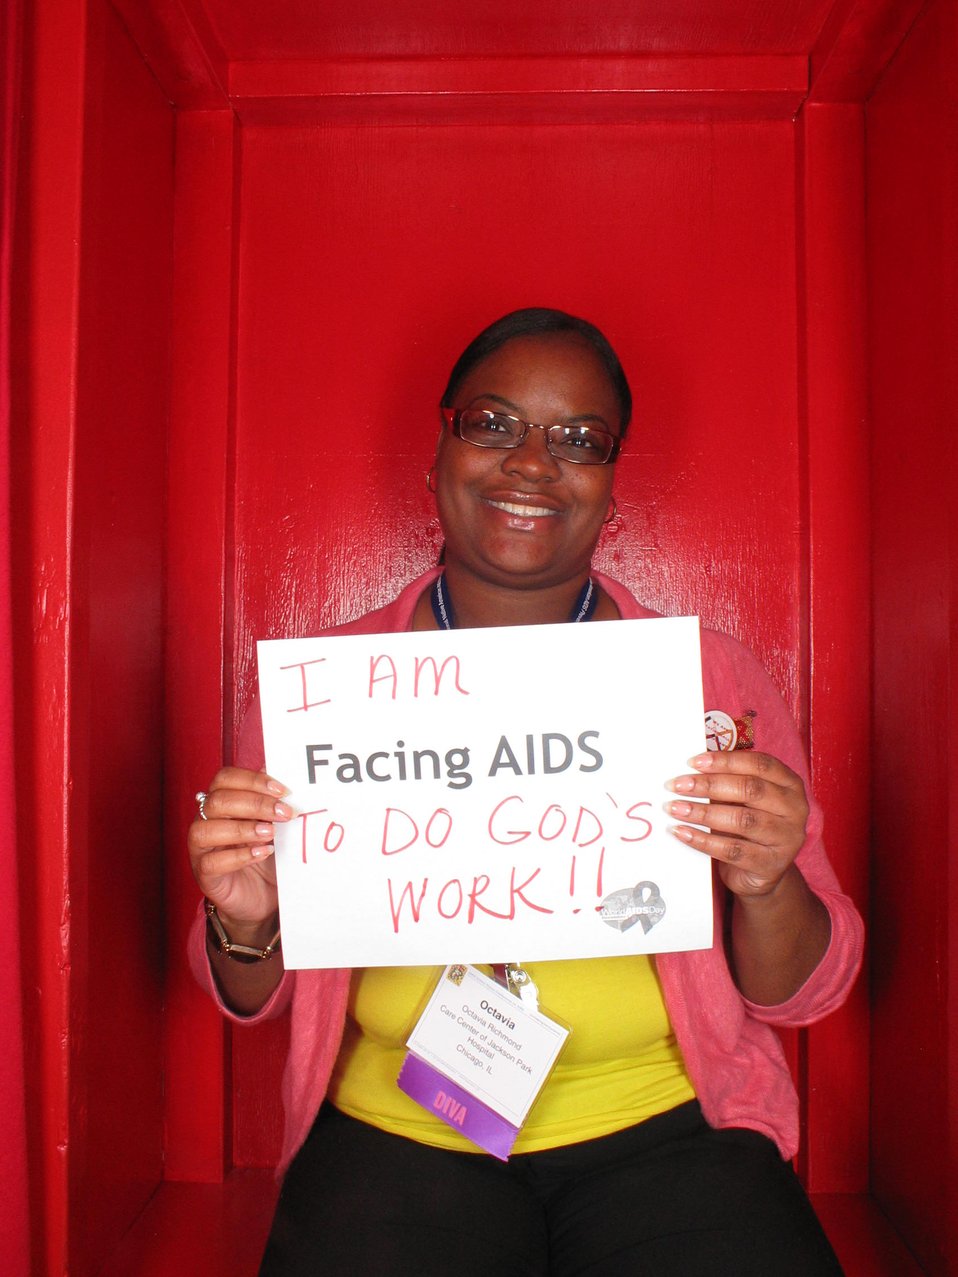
I am Facing AIDS to do God's work!!